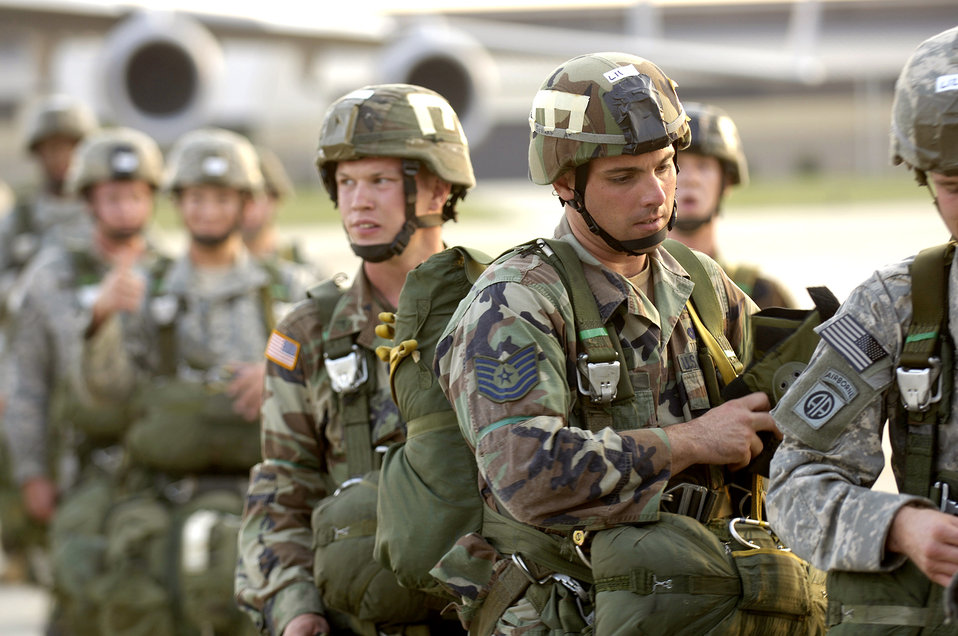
Airborne Airmen, Soldiers train together

Tech. Sgt. Paul Schaaf waits to board a C-130 Hercules that will transport him to a drop zone at Pope Air Force Base, N.C., on Wednesday, April 25, 2006. Airmen and more than 2,000 Soldiers from the Army's 82nd Airborne Division were taking part in a Joint Forcible Entry Exercise. Sergeant Schaaf is assigned to the 820th Security Forces Squadron at Moody Air Force Base, Ga. Thirty other jump-qualified Air Force engineers, firefighters, and security forces Airmen assisted in security and rapid runway repair.